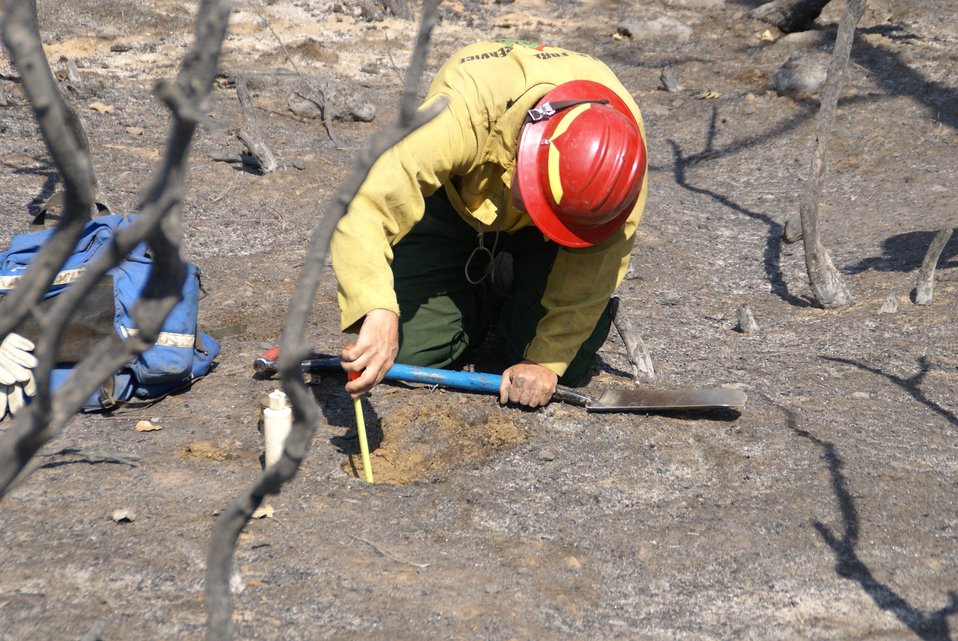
Burned Area Emergency Response (BAER) soil scientist measures the depth the soil has been burned on the Rim Fire. BAER teams start work even before the fire is completely extinguished at the Rim Fire. BAER is a rapid assessment of burned watersheds by a BAER team to identify imminent post-wildfire threats to human life and safety property and critical natural or cultural resources on National Forest System lands and take immediate actions to implement emergency stabilization measures before the first major storms. Fires result in loss of vegetation exposure of soil to erosion and increased water runoff that may lead to flooding increased sediment debris flows and damage to critical natural and cultural resources. BAER team members implement seeding and mulching installation to prevent erosion, erect temporary water run-off control structures that will protect recovering areas, and installation of warning signs, replace safety related facilities, remove safety hazards, prevent permanent loss of habitat for threatened and endangered species, and prevent the spread of noxious weeds and protect critical cultural resources. The Rim Fire in the Stanislaus National Forest near in California began on Aug. 17, 2013 and is under investigation. The fire has consumed approximately 256,169 acres and is 84% contained.